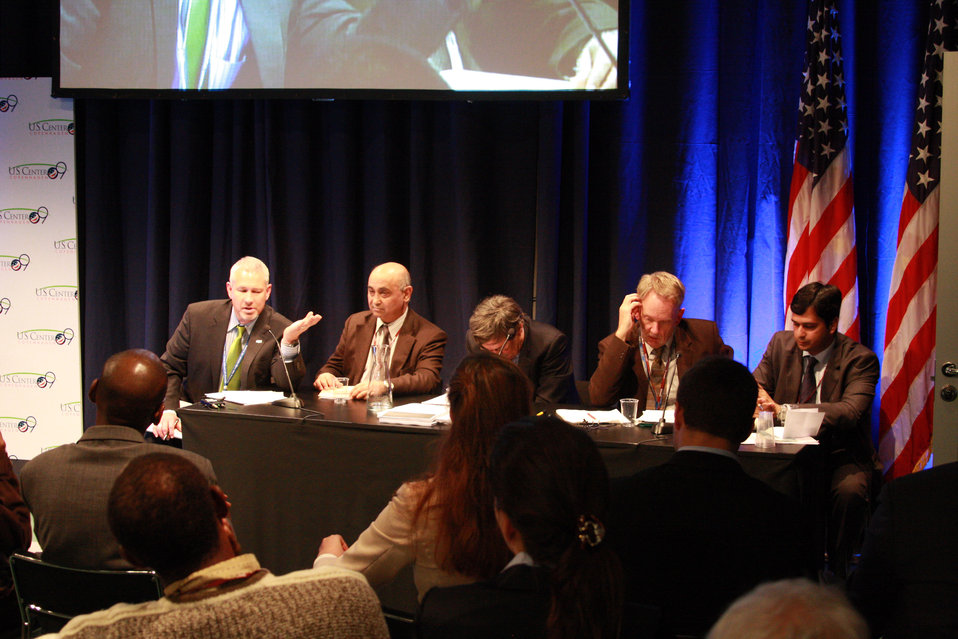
U.S. Center panel presentation at COP15 (Conference of the Parties to the UN Framework Convention on Climate Change) in Copenhagen, Denmark December 10, 2009.